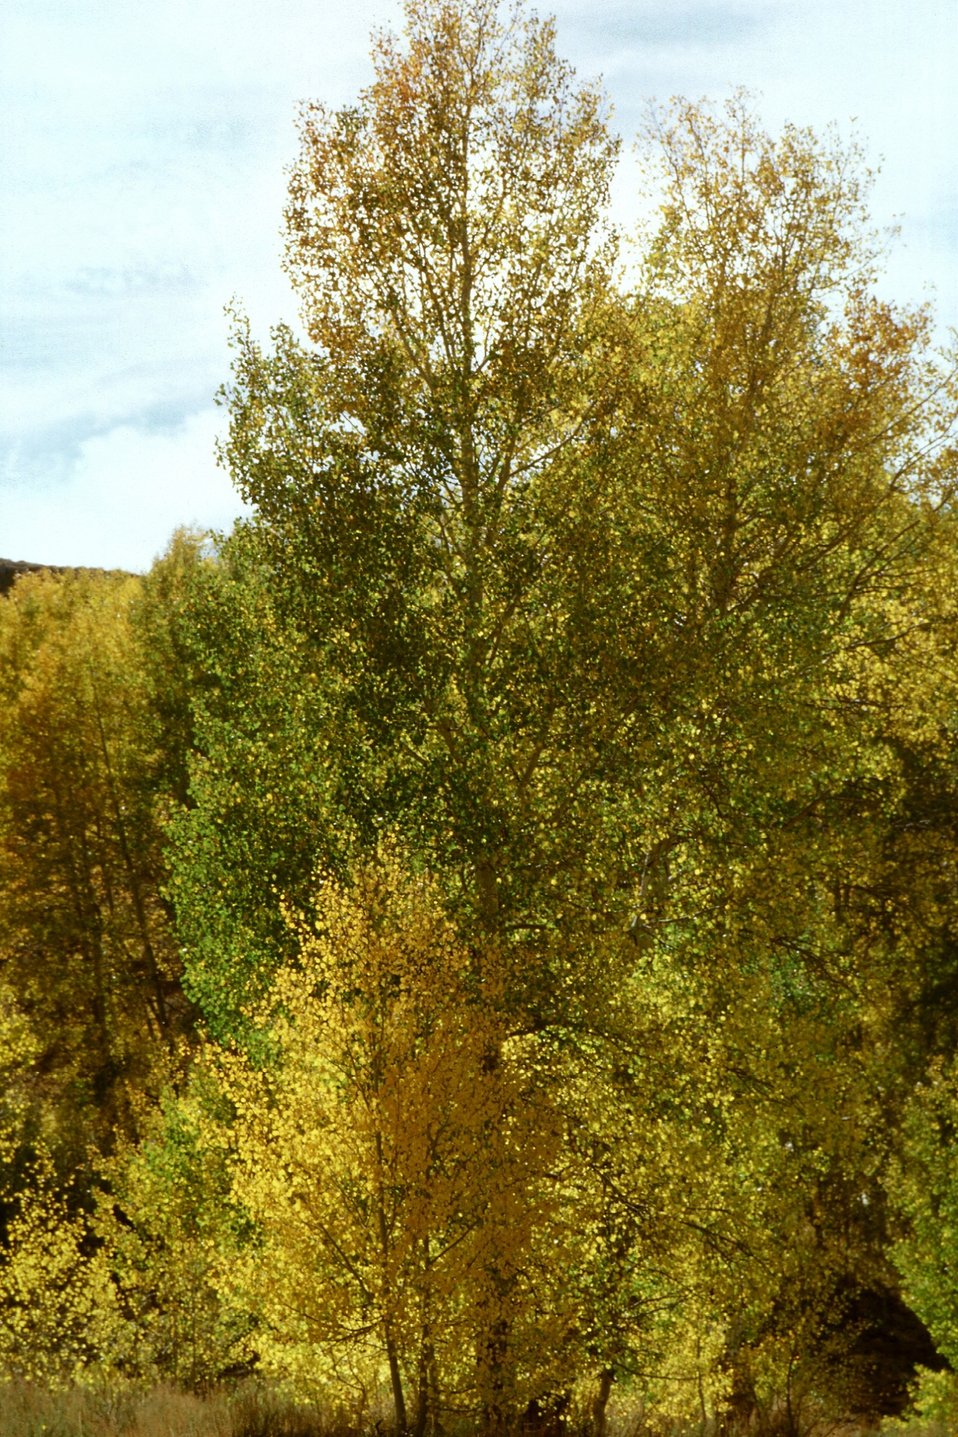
Aspens at Fish Creek, Steen's Mountain.